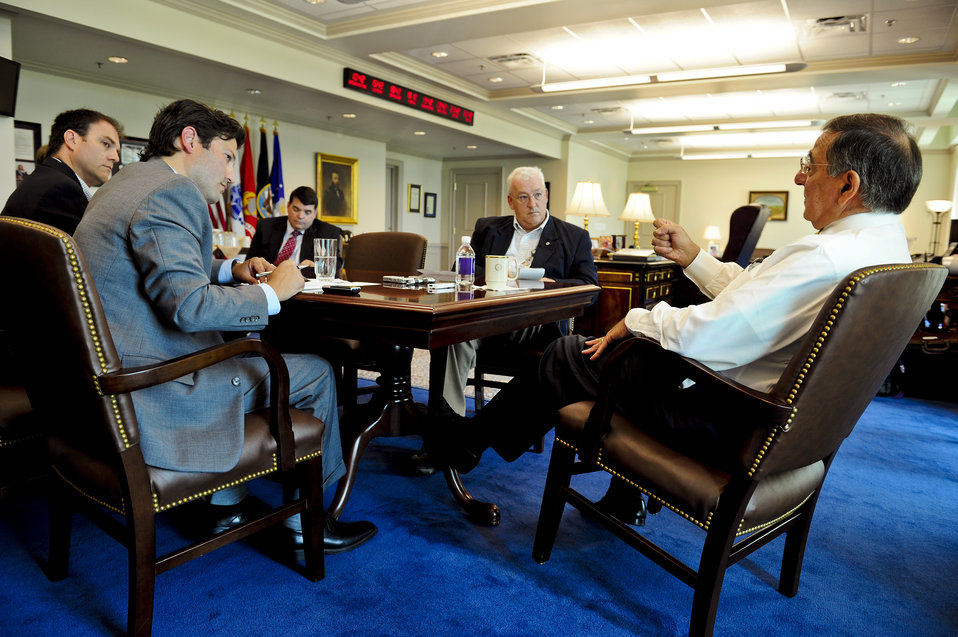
Panetta: Any retirement changes won’t affect serving military

Defense Secretary Leon E. Panetta, right, holds a roundtable discussion with members of the press in his office at the Pentagon on Aug. 19, 2011. Writers representing American Forces Press Service, Stars and Stripes and the Military Times Media Group interviewed Panetta on issues related to security and military forces.